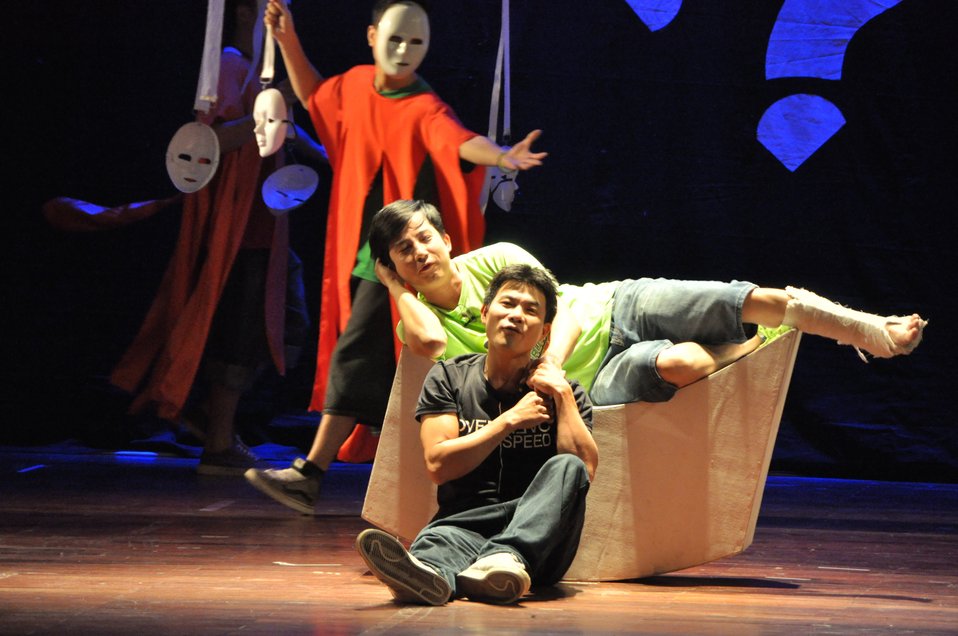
PEPFAR Musical Questions and Exclamations

Hanoi, May 17, 2013